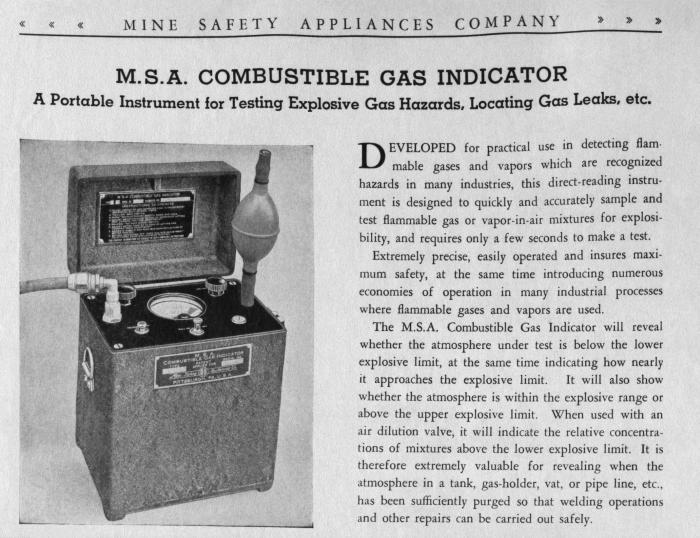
This 1949 historical photograph was provided by the Center for Disease Control's (CDC), National Institute for Occupational Safety and Health (NIOSH). This image depicted a copy of an advertisement for the Mine Safety Appliances (MSA) Company's, Combustible Gas Indicator�, a portable instrument for detecting and measuring the presence of combustible gases in workplace environments. On the left side of the instrument (right side in the product photograph), the bulb of a hydrogen cyanide detector was visible.